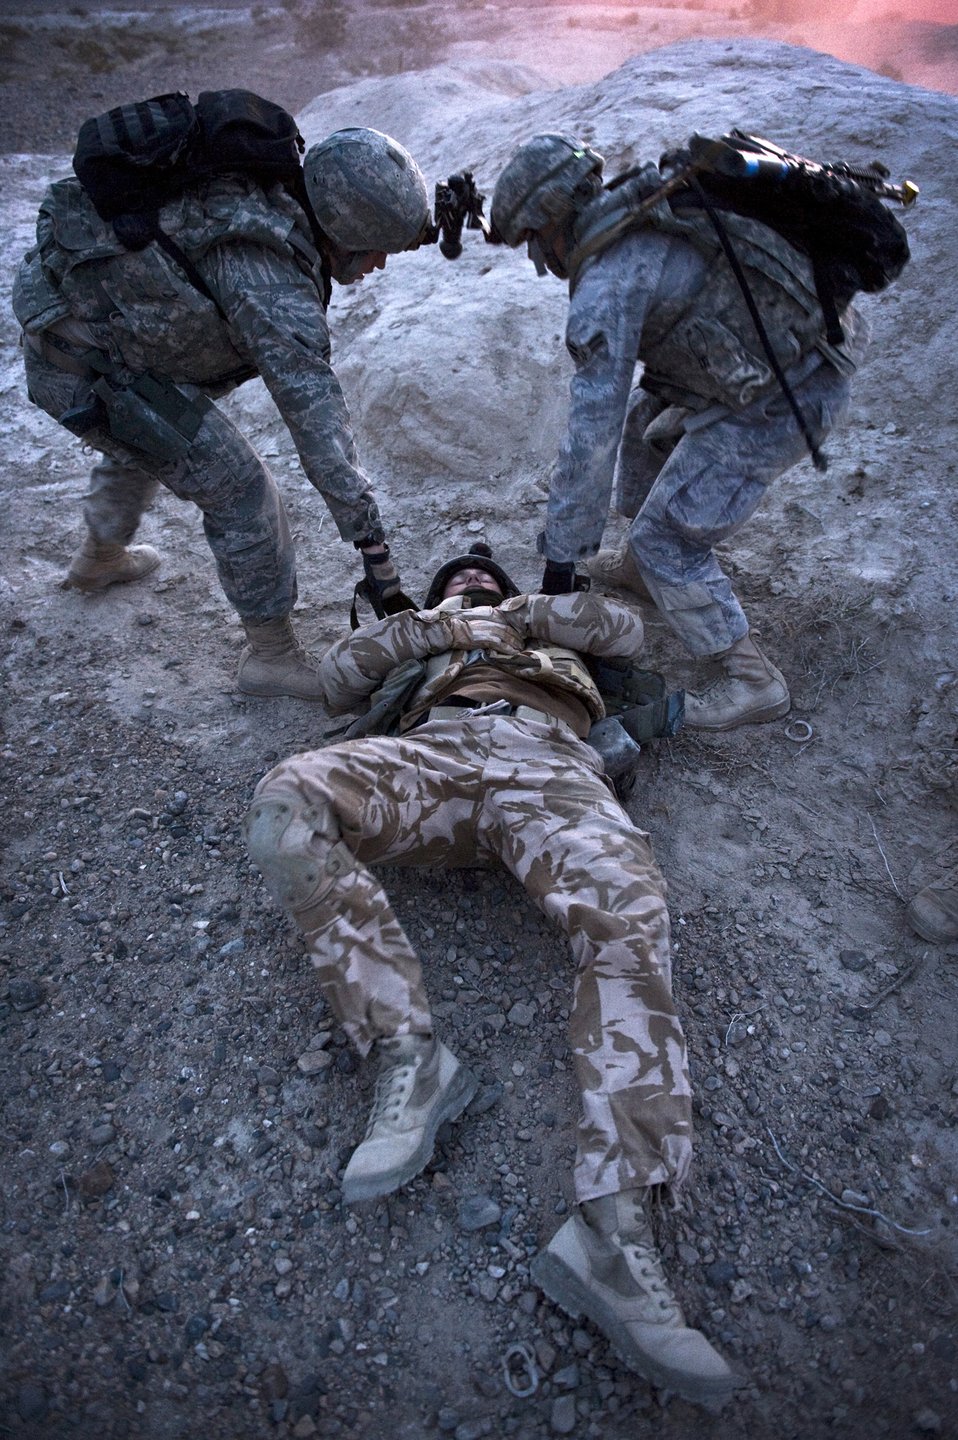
Helping a wingman

Airmen 1st Class Eddie Morgan and Kyle Selsor drag Royal Air Force Senior Aircraftsman Gareth Dight out of imminent danger after being 'wounded' March 16, 2011, during a Desert Eagle exercise at the Nevada Test and Training Range.